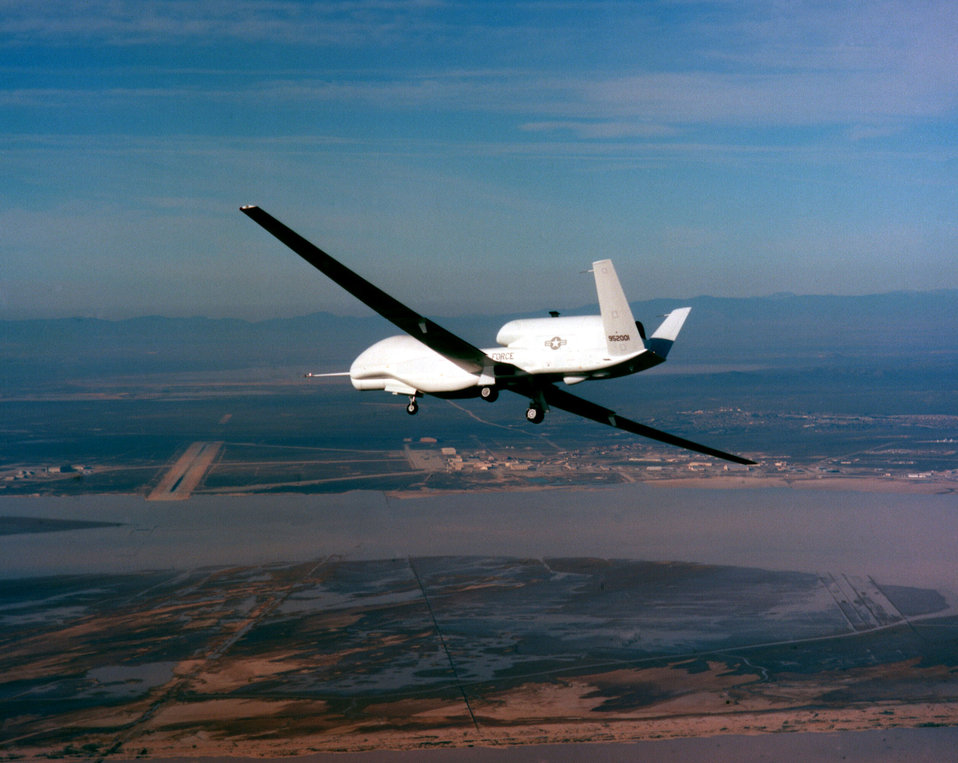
Global Hawk

EDWARDS AIR FORCE BASE, Calif. -- Global Hawk air vehicle number one, a high-altitude, long endurance unmanned air vehicle, took off from the main runway for its first airworthiness evaluation and payload demonstration flight. Global Hawk's mission is to provide military field commanders with a high-altitude, long- endurance system that can obtain high resolution, near- real-time imagery of large geographic areas.